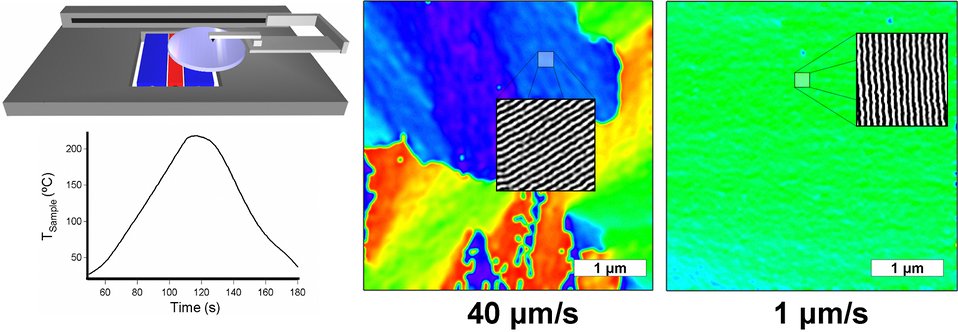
NIST Team Develops Novel Method for Nanostructured Polymer Thin Films

Schematic of the NIST 'cold zone' annealing process for polymer thin films on a semiconductor wafer. Experiment images are color-coded to show regions with different cylinder orientations, as measured by atomic force microscopy. Relatively rapid transit times (middle) leave a jumble of different regions that become largely homogeneous at slower speeds (right).